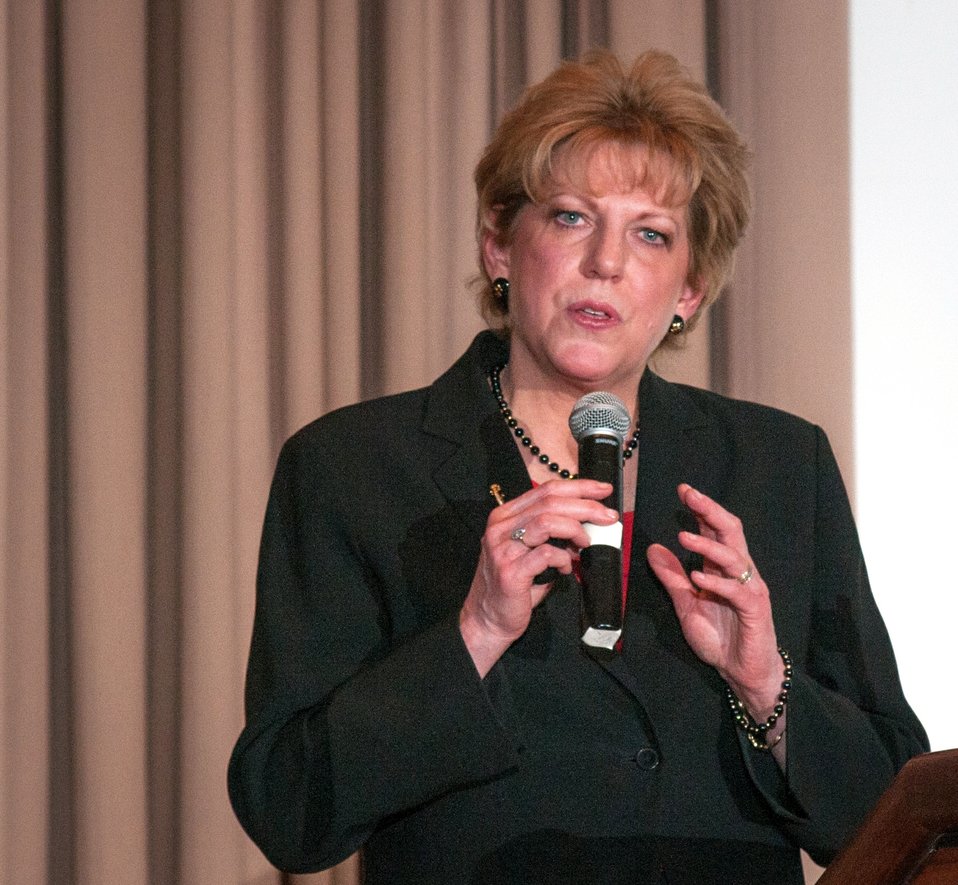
American Association of University Women Executive Director and CEO Linda Hallman, the keynote speaker, during the U.S. Department of Agriculture (USDA) 2013 Women’s History Month Observance event, “Women Inspiring Innovation Through Imagination: Celebrating Women in Science, Technology, Engineering, and Mathematics, Thursday, March 21, 2013, in Washington, D.C. Additional remarks were made by Agriculture Deputy Secretary Dr. Kathleen Merrigan; Administration Deputy Assistant Secretary Deputy Assistant Secretary Robin Heard; and Agriculture Research Service National Programs Associate Administrator Dr. Chavonda Jacobs-Young.